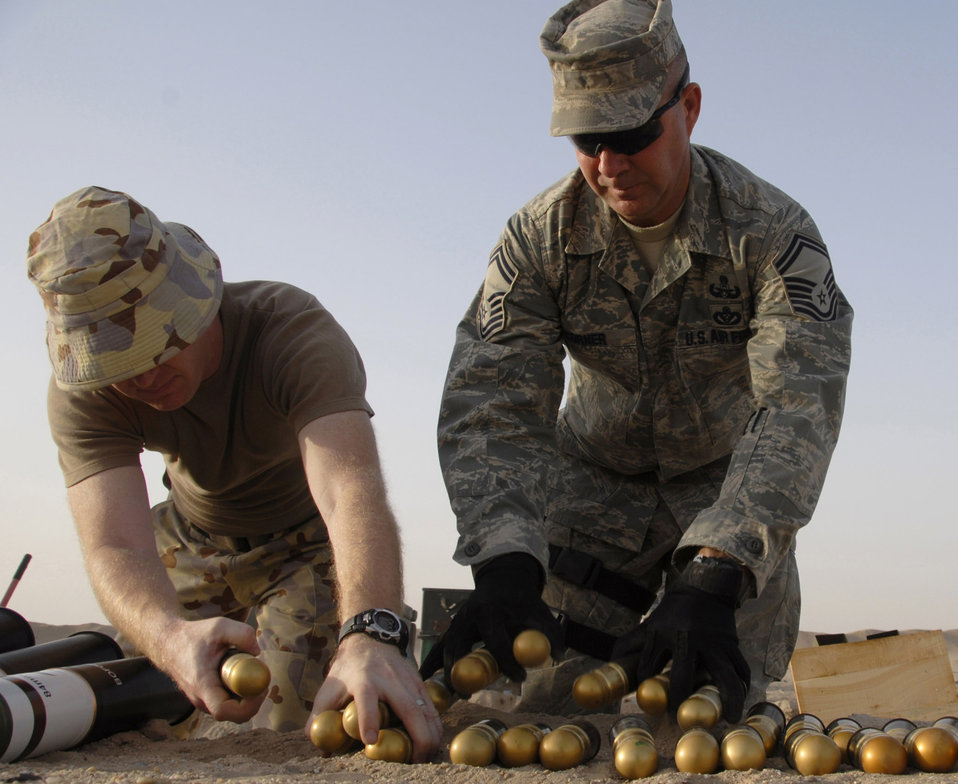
Easy does it

Australian Army Warrant Officer Class Two Neil Snape and Senior Master Sgt. Russell Corner move 40-millimeter dual purpose rifle grenades for a controlled detonation June 20 at an explosive ordnance disposal range in Southwest Asia.